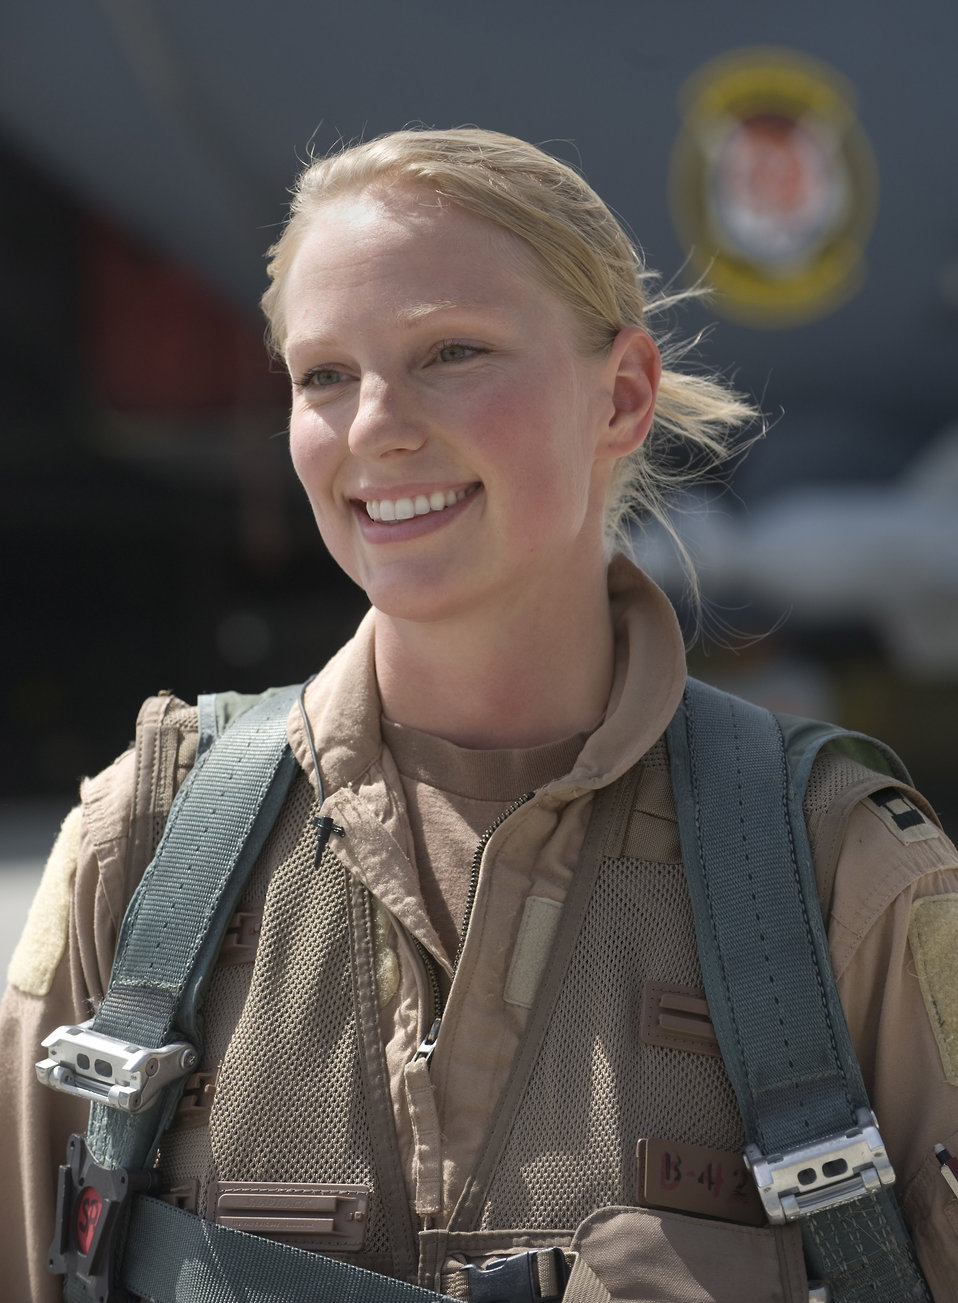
F-15E pilots aid troops fighting in Afghanistan

Capt. Vanessa Mahan relaxes for a moment after returning from a mission Sept. 15 at Bagram Airfield, Afghanistan. Captain Mahan is an F-15E Strike Eagle weapons systems officer deployed to the 455th Air Expeditionary Wing in Afghanistan from Seymour Johnson Air Force Base, N.C. She is from St. John, Ind.